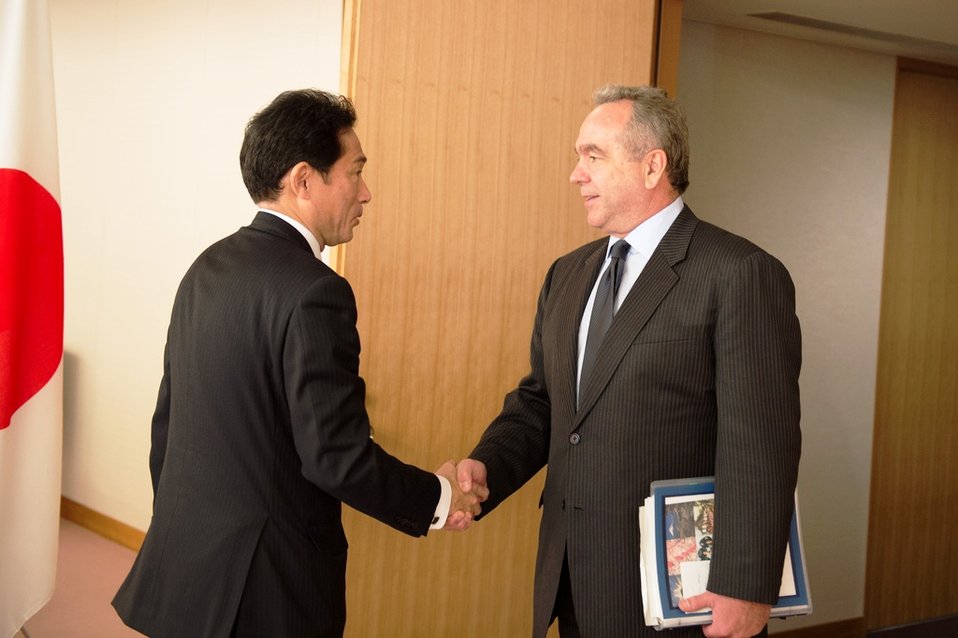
Assistant Secretary Campbell Is Greeted By Japanese Foreign Minister Kishida

Assistant Secretary of State for East Asian and Pacific Affairs Kurt M. Campbell is greeted by Japanese Foreign Minister Fumio Kishida before their meeting at the Ministry of Foreign Affairs in Tokyo, Japan, January 17, 2013.